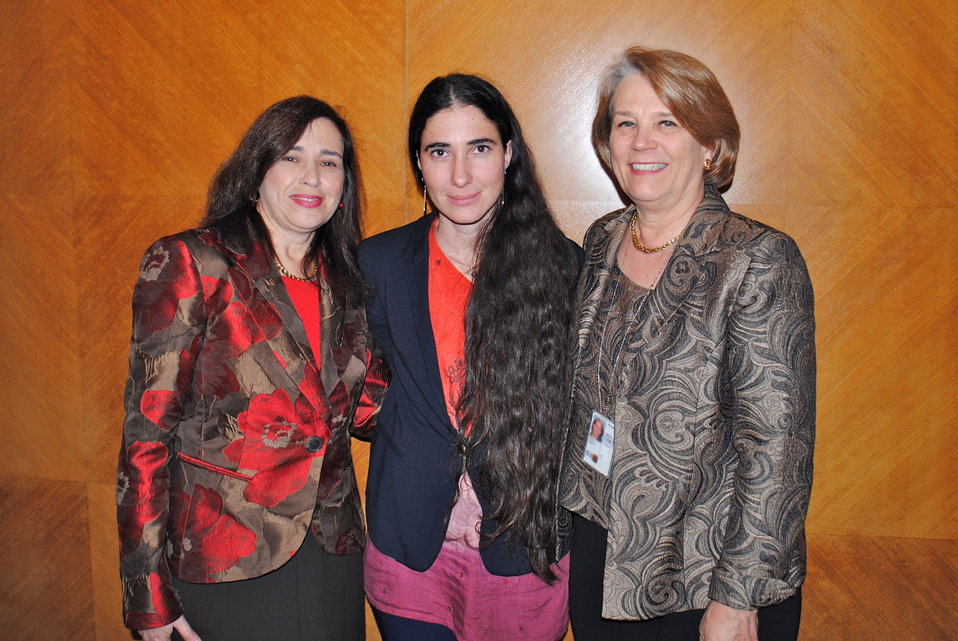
Yoani Sanchez With Under Secretary Sonenshine and Acting Ambassador Wiener

Yoani Sanchez, winner of the 2011 Secretary’s International Women of Courage award, meets with Under Secretary for Public Diplomacy and Public Affairs Tara Sonenshine and Acting Ambassador-at-Large for Global Women’s Issues Sharon Wiener at the U.S. Department of State in Washington, D.C., on March 20, 2013.